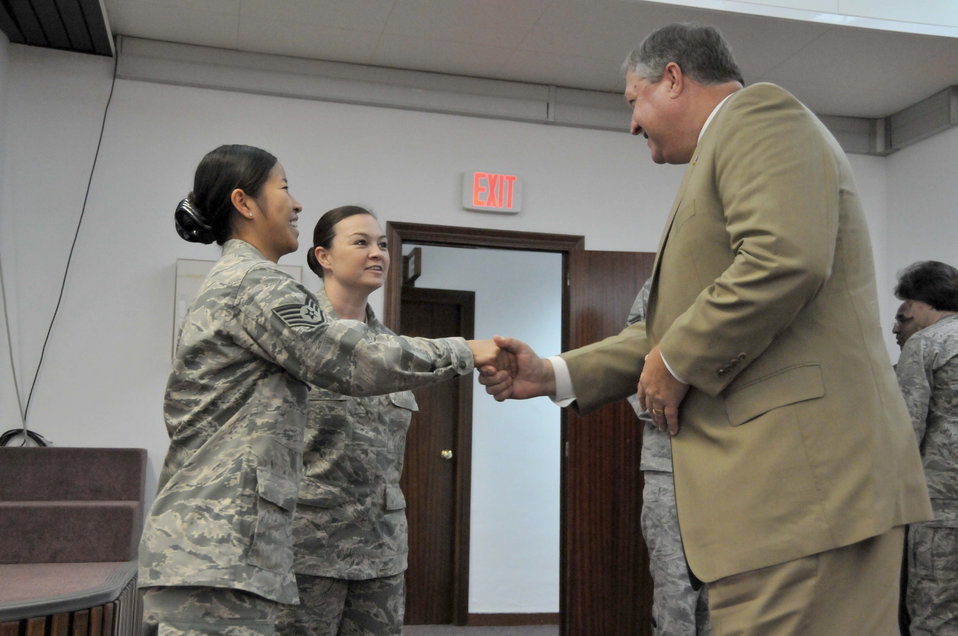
SecAF

Secretary of the Air Force Michael Donley thanks Staff Sgts. Kaythi Saw and Patricia Harvey June 17, 2011, for their service to the Air Force. Sergeants Saw and Harvey are assigned to the 52nd Force Support Squadron.